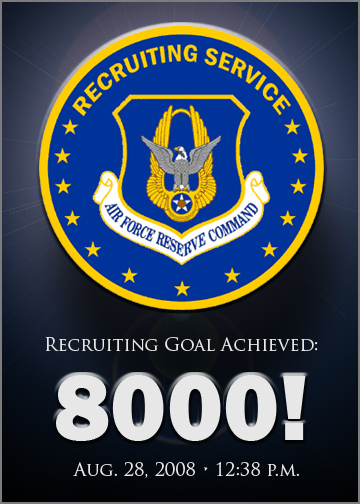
Air Force Reserve eclipses recruiting goal for 8th straight year

For the eighth consecutive year, the Air Force Reserve met and eclipsed its annual recruiting goal. Reserve recruiters across the country and around the world tallied the 8,000 mark at 12:38 p.m. EDT, Aug. 28.